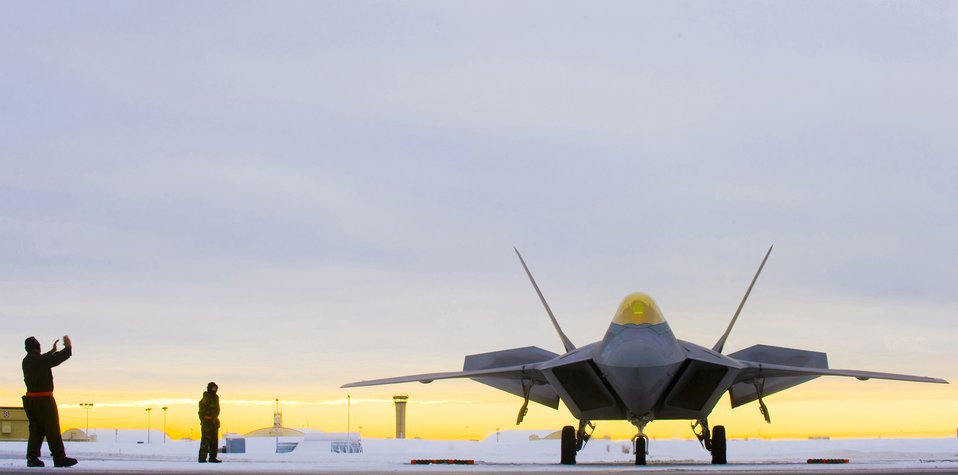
Raptor set for flight

A 90th Aircraft Maintenance Unit crew chief signals the pilot of an F-22 Raptor laden with concrete bombs to begin its departure for a training mission at Elmendorf Air Force Base, Alaska. The F-22 performs both air-to-air and air-to-ground missions.